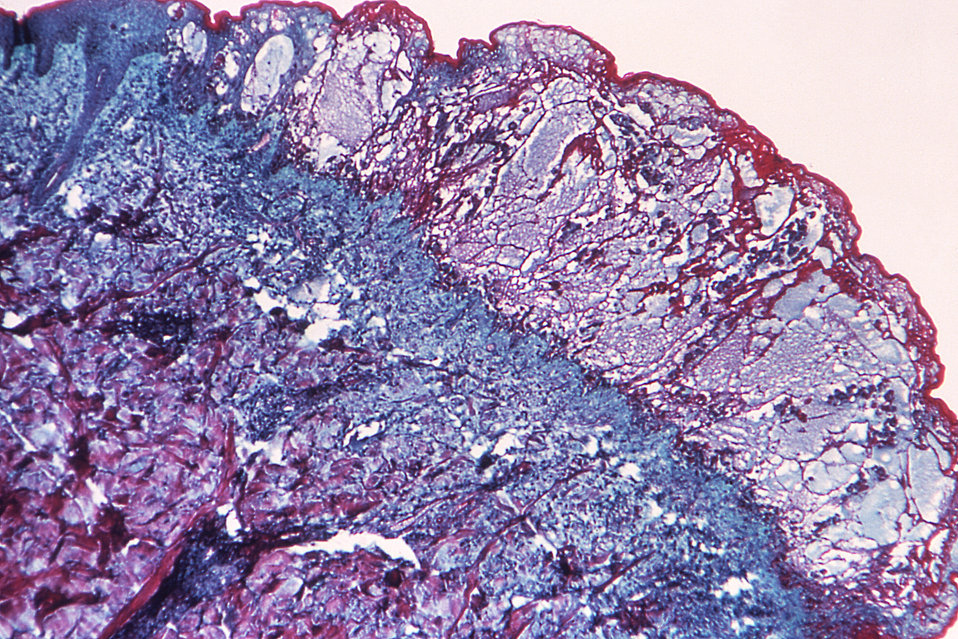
Under a relatively low magnification of 50x, this hematoxylin-eosin (H&E)-stained photomicrograph reveals some of the cytoarchitectural histopathologic changes which you'd find in a human skin tissue specimen that included a chickenpox, or varicella zoster virus lesion.